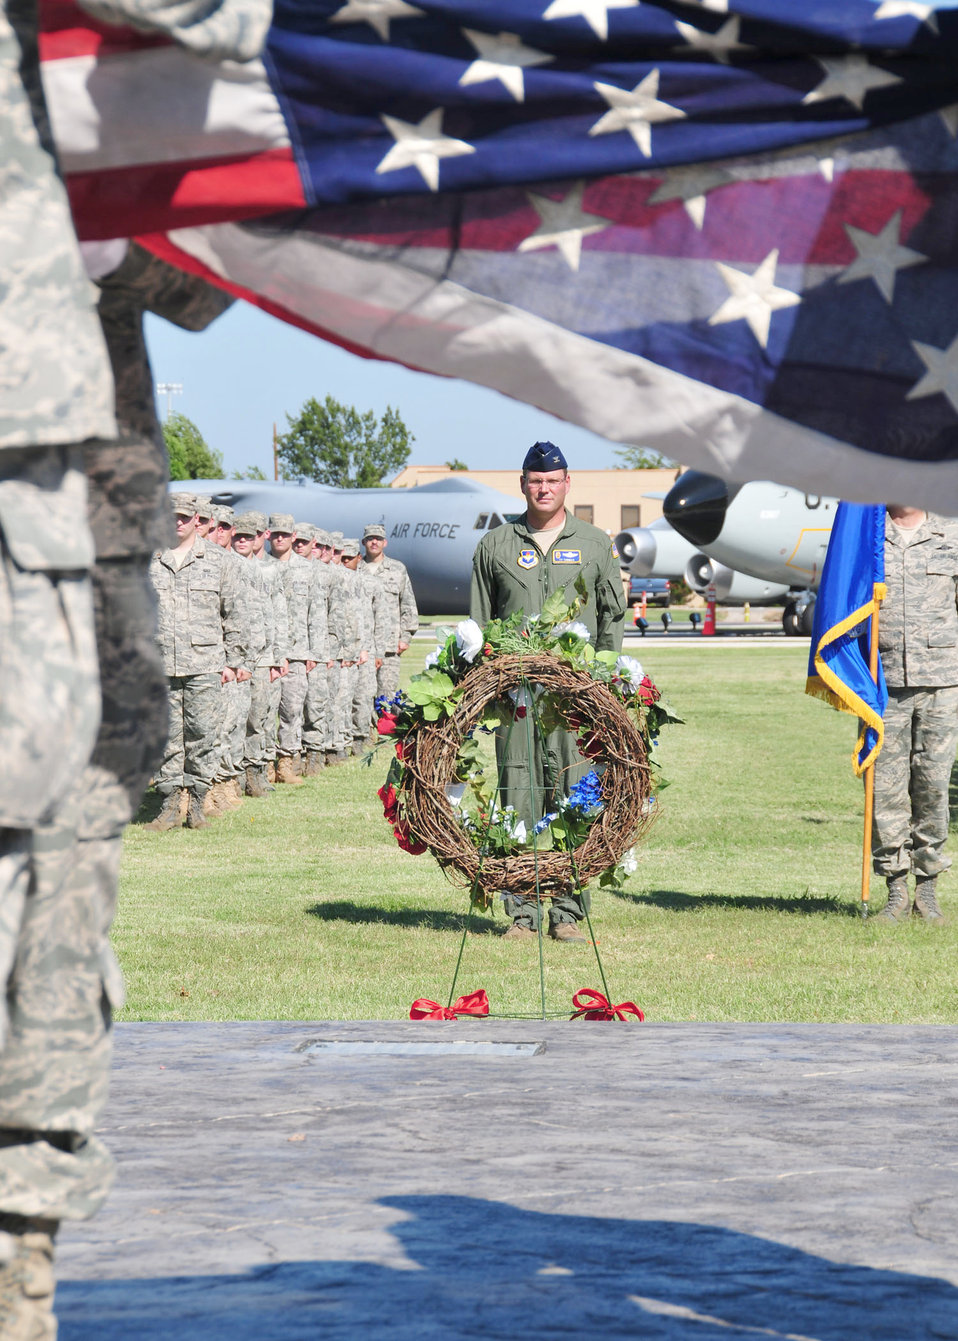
Solemn respect

Col. Ty Thomas, 97th Air Mobility Wing commander, watches as the base honor guard retire the flag during a 9/11 memorial ceremony Sept. 10, 2010, at Altus Air Force Base, Okla. The flag was flying on the base Sept. 11, 2001, and was flown again as part of the remembrance ceremony.